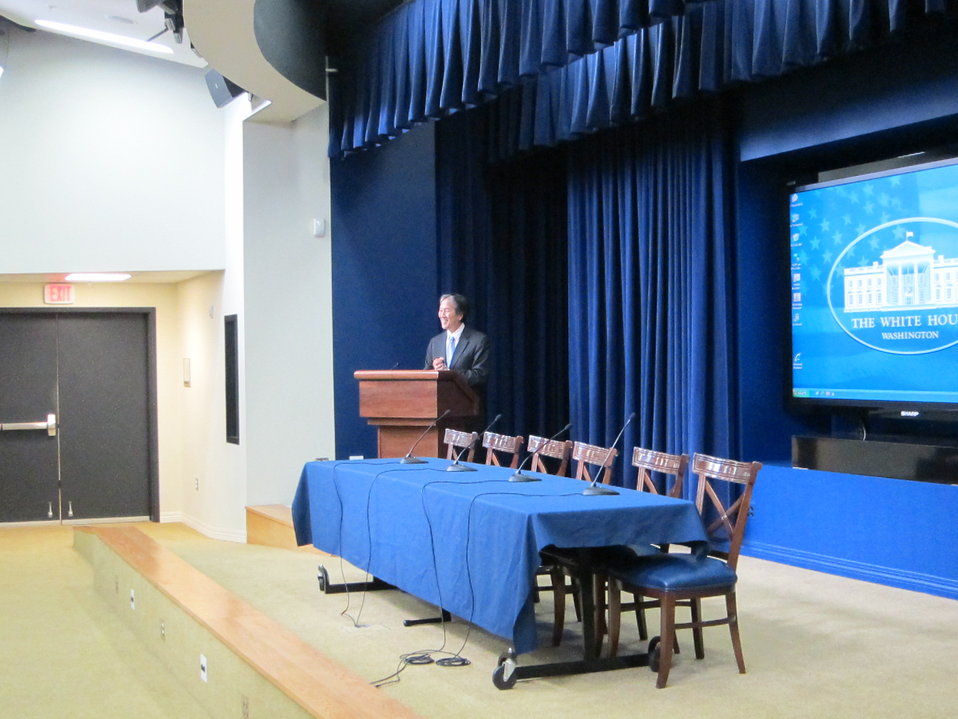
WH 2012 World Hepatitis Day Event